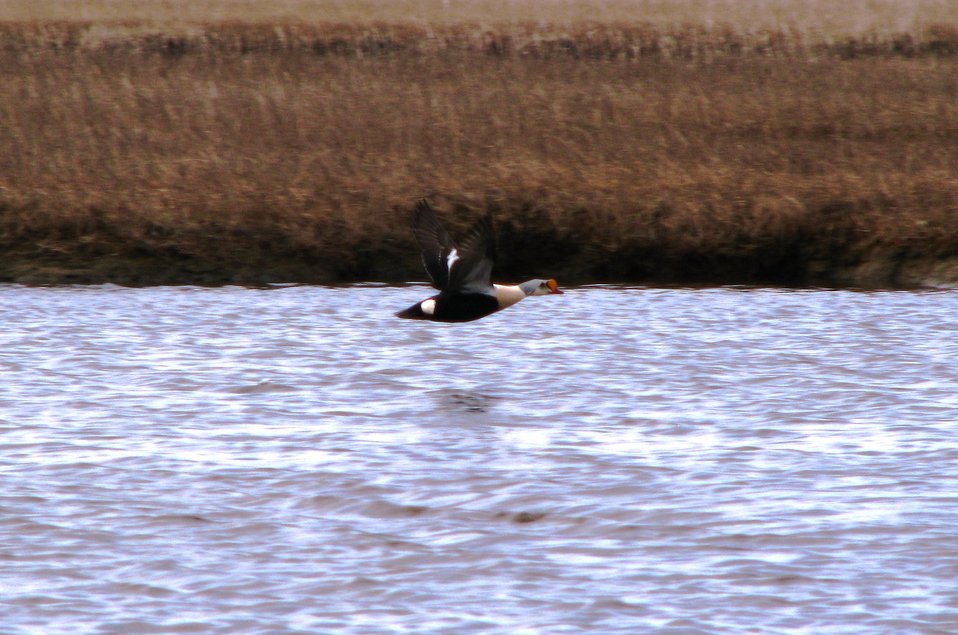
King Eider male in flight

Yukon Delta NWR